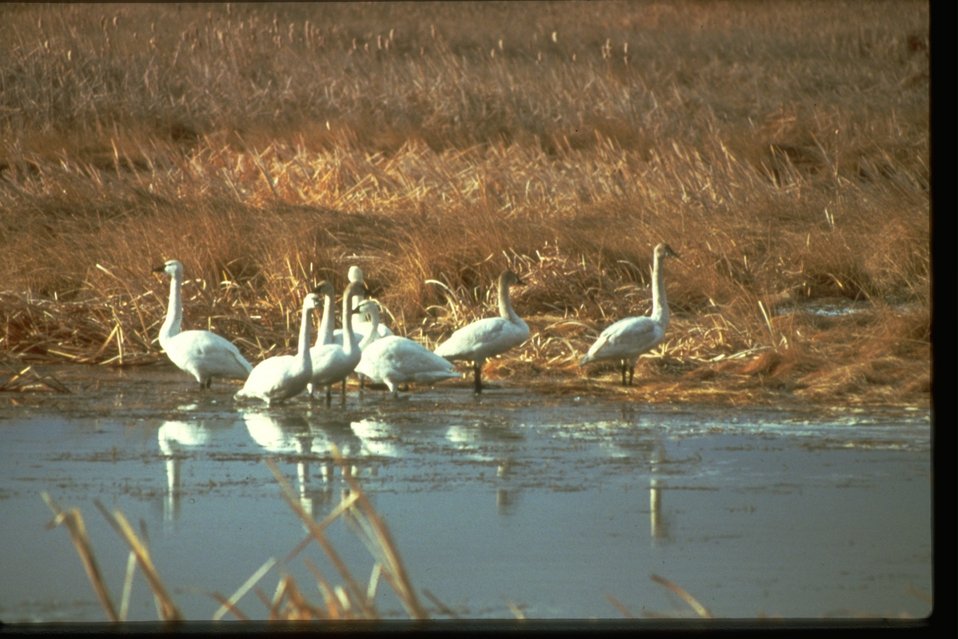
Tundra Swans standing along icy bank.